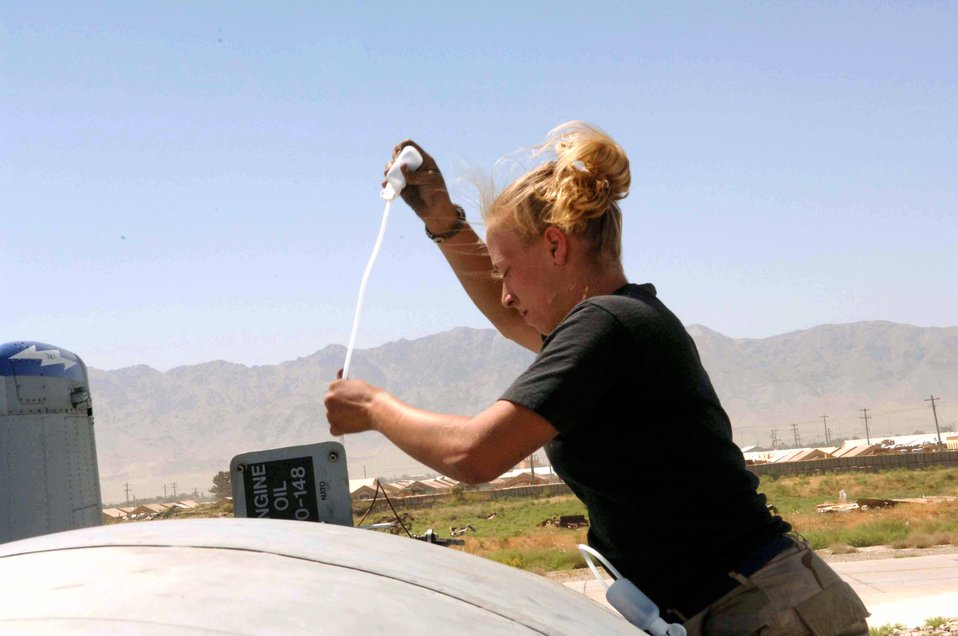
Thunderbolt maintenance

BAGRAM AIR BASE, Afghanistan -- Airman 1st Class Alisha Cox checks the oil on an A-10 Thunderbolt II. She is a crew chief with the 455th Expeditionary Aircraft Maintenance Squadron here and is deployed from Pope Air Force Base, N.C.